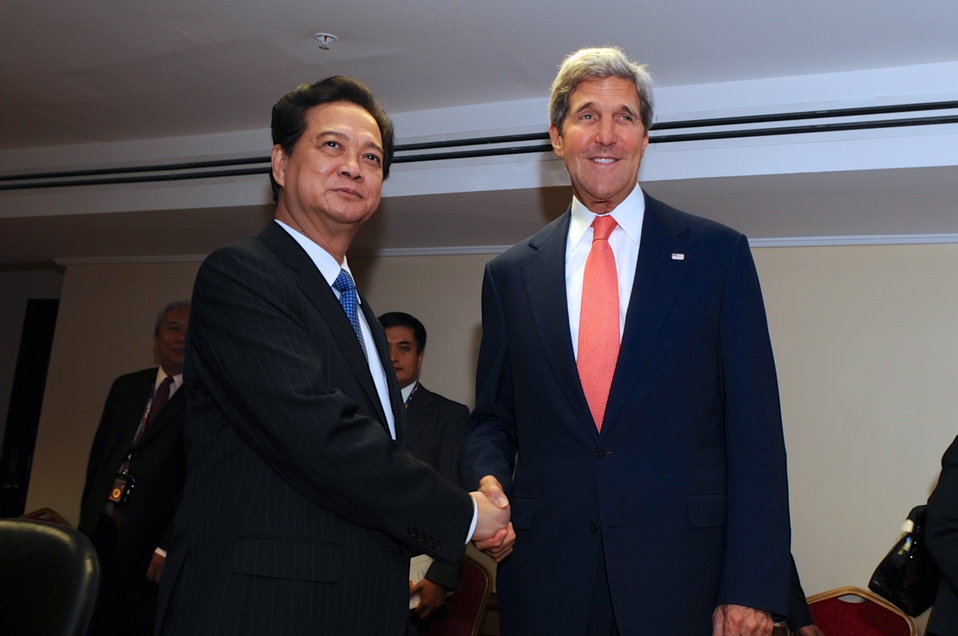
Secretary Kerry, Vietnamese Prime Minister Dung Pose for Photographers

U.S. Secretary of State John Kerry and Vietnamese Prime Minister Nguyen Tan Dung pose for photographers before a bilateral meeting at the margins of the ASEAN Summit in Bandar Seri Begawan, Brunei, on October 10, 2013.